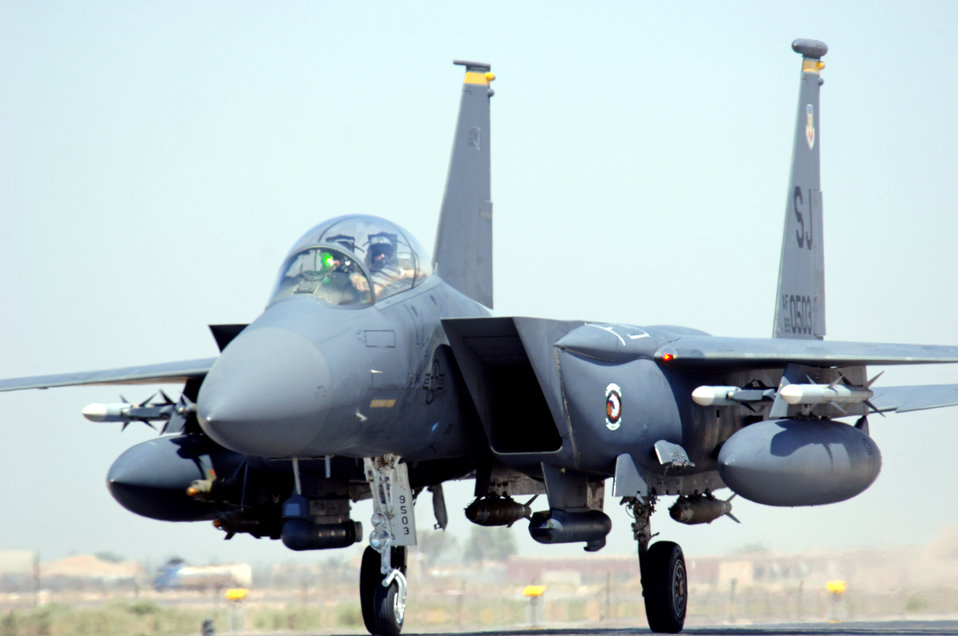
Flying missions support Operation Iraqi Freedom

An F-15E Strike Eagle taxis at Balad Air Base, Iraq, after an Operation Iraqi Freedom mission on Monday, June 12. The aircraft is deployed from Seymour Johnson Air Force Base, N.C.